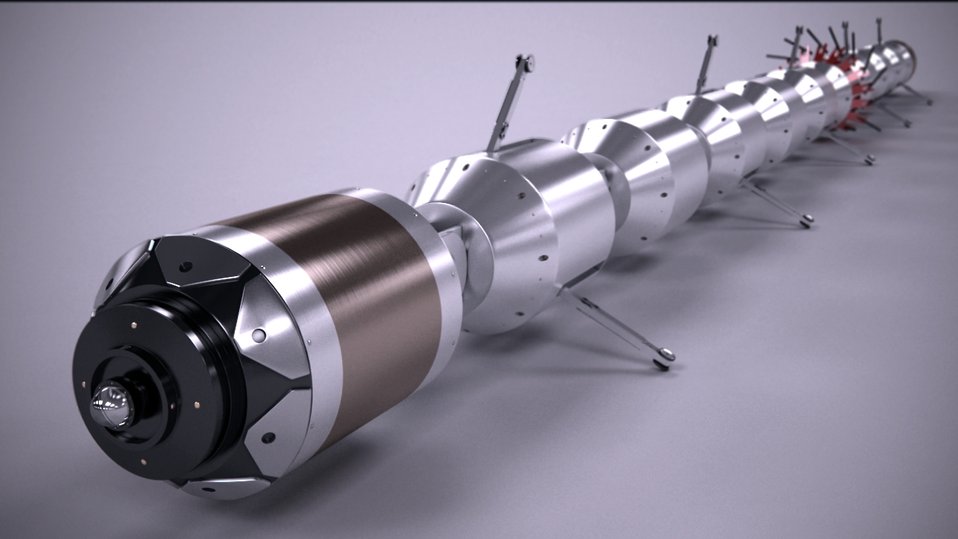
At National Energy Technology Laboratory, the Explorer II robot with remote field eddy current sensor deployed. (December 4, 2007)

The wireless, self-propelled Explorer II proved its worth when it was tested in a live eight-inch distribution main pressurized at 100 pound per square inch. the robot was launched and retrieved multiple times as it inspected-with cameras and sensors-a section of Northwest Fuel gas line in Brookfield, Pennsylvania.